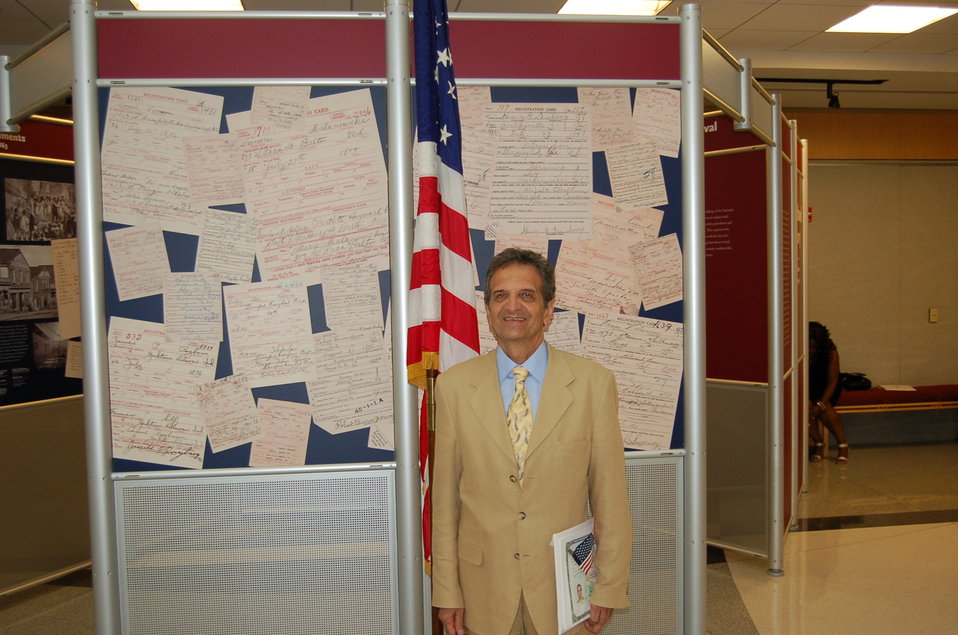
New Citizens